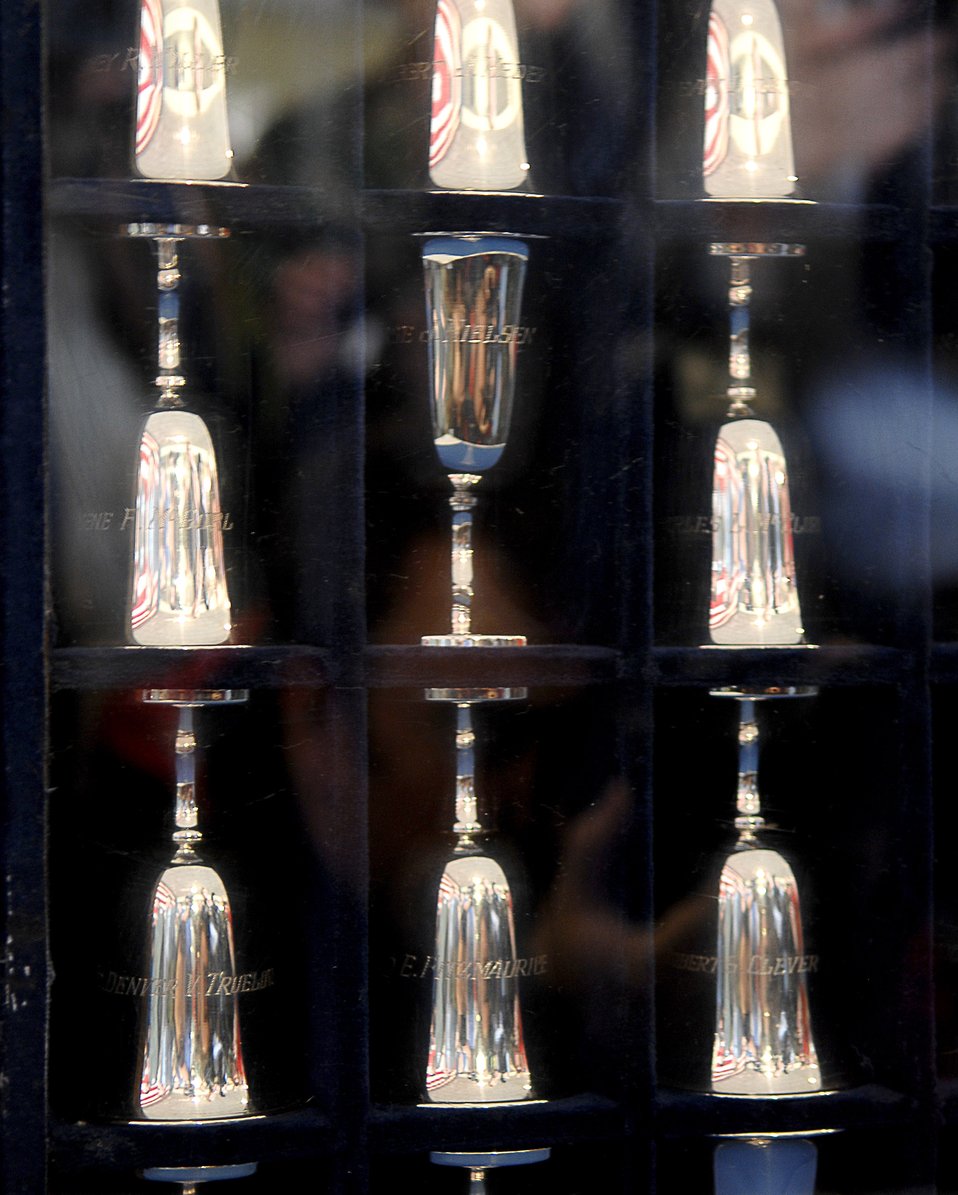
Doolittle Raiders 65th anniversary kicks off

The Doolittle Tokyo Raiders Silver Goblets are displayed during a ceremony honoring the raiders and celebrating the 65th Anniversary of the raid April 17 at Randolph Air Force Base, Texas. There are 80 goblets representing all 80 Doolittle raiders. When a raider dies, his goblet is turned over in the case. There are 14 surviving raiders. The Doolittle Raiders flew B-25 Mitchell bombers over Japan April 18, 1942, just four months after Pearl Harbor.